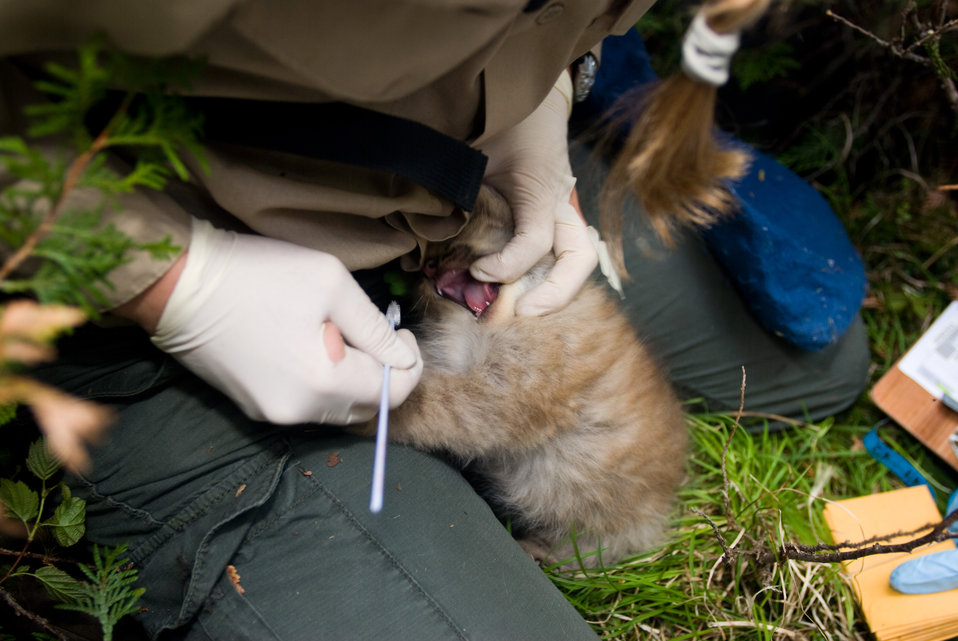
Canada Lynx DNA Swab

As part of a battery of tests, a kitten is swabbed for a DNA sample. The reluctance of the kittens was obvious and made it a difficult task for the biologists.